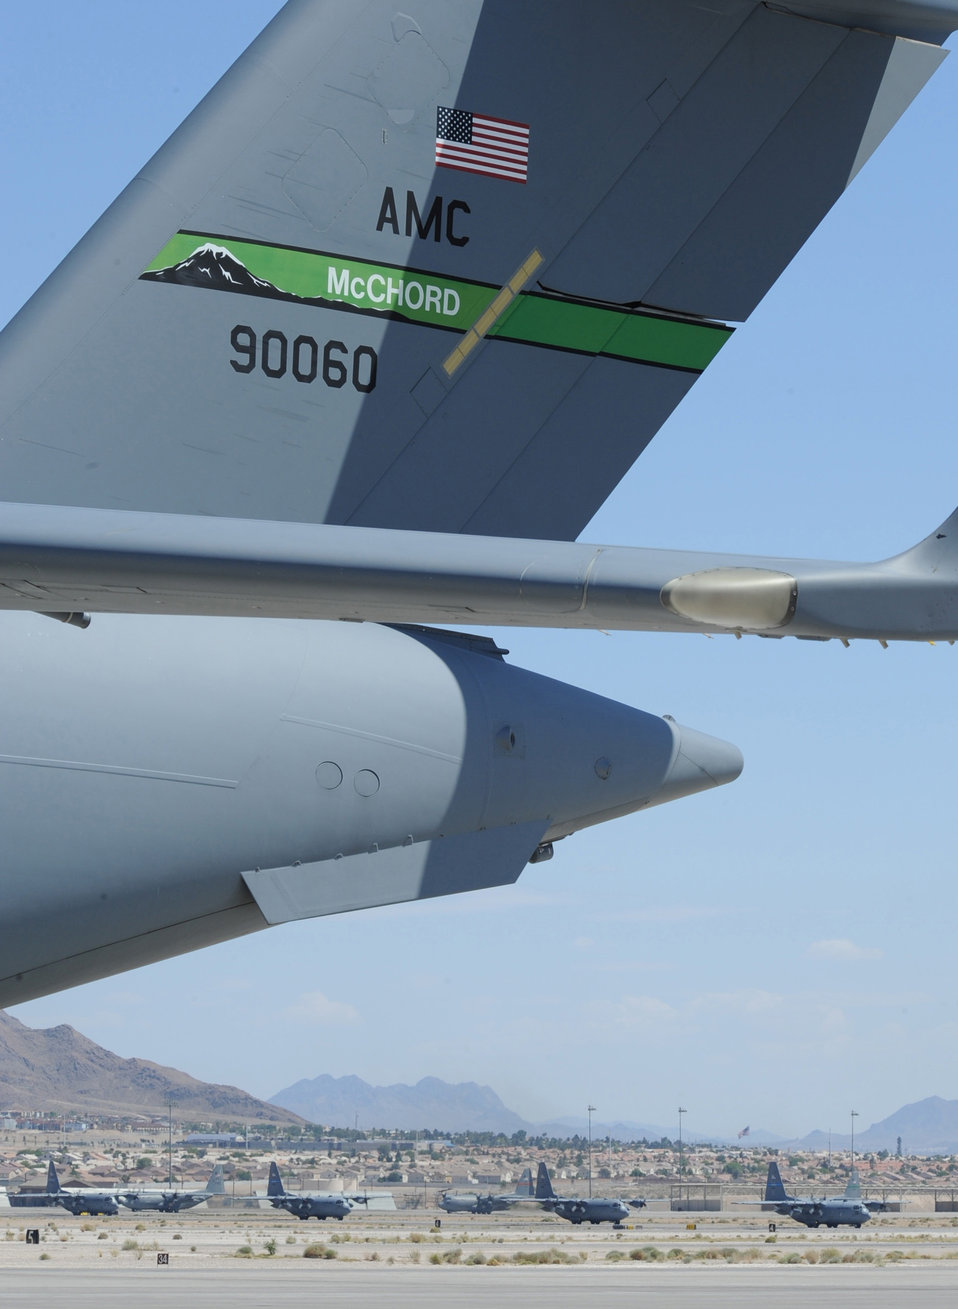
Testing mobility forces

Several C-130 Hercules aircraft taxi in on the Nellis Air Force Base, Nev., flightline May 20 as part of the Mobility Air Forces Exercise. The 29th Weapons Squadron provides advanced tactical training to C-130 Hercules aircrew selected to attend the Weapons School here. The six-month, graduate-level course culminates in a massive airlift mission, called the Mobility Air Forces Exercise. More than 30 airlift assets and hundreds of support personnel from across the Air Force participate in the biannual training exercise. (U.S. Air Force photo/Airman 1st Class Stephanie Rubi